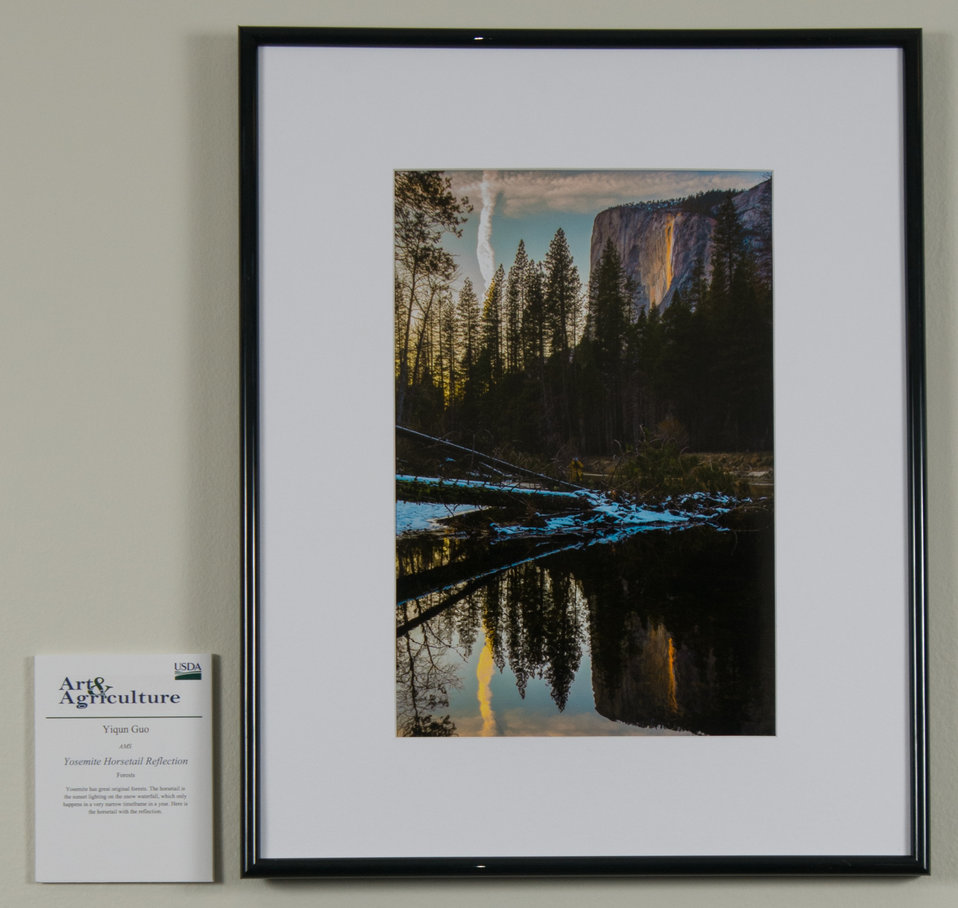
Online Viewer's Choice entries of the 2013 Art & Agriculture, Tuesday, July 9, 2013, in the South Building, Washington, D.C. Themes were expressed by employees from across the department and the contest was open to full-time and part-time USDA employees. Winning artwork will be displayed till the end of the year. U.S. Artistic expression is a creative outlet that is vital for an individual to grow and develop.